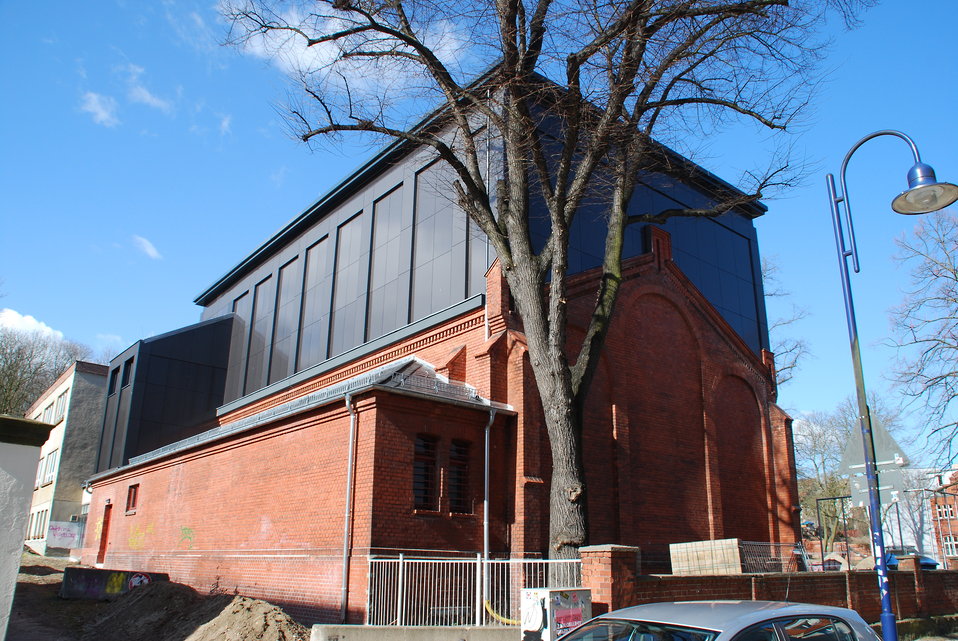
Abriss Bahnhofstunnel Frankfurt (Oder)